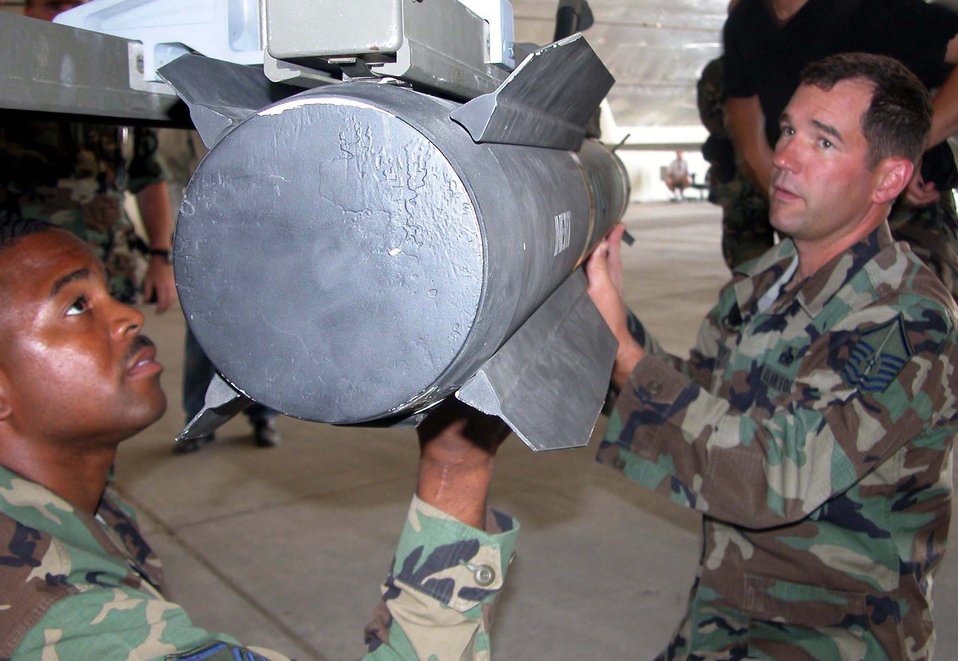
Predator load

INDIAN SPRINGS AIR FORCE AUXILIARY FIELD, Nev. -- Master Sgts. Michael Brooks (left) and Lloyd Canty load an inert Hellfire missile onto an MQ-1 Predator here June 17 as part of a test of the Joint Multiplatform Weapons Carriage System. The Airmen are assigned to the 757th Aircraft Maintenance Squadron.